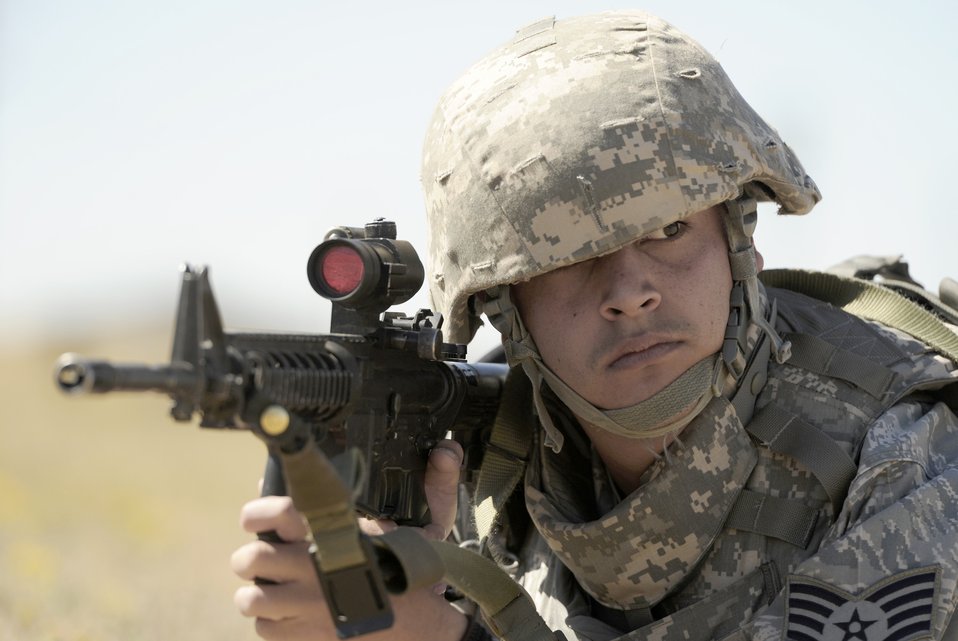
Combat Readiness Training

Staff Sgt. Carlos Rosario participates in tactical movement drills during the 75th Security Forces Combat Readiness Training course Sept. 22, 2010, at Hill Air Force Base, Utah. The course teaches Airmen basic tactical movements, land navigation and self aid buddy care.